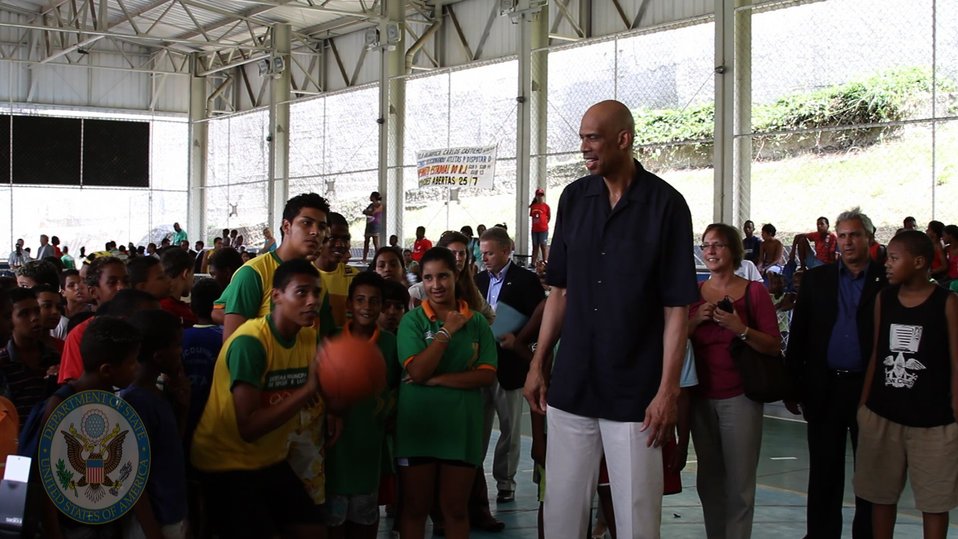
Global Cultural Ambassador Kareem Abdul-Jabbar Engages Youth

Hall-of-Famer and Global Cultural Ambassador for the U.S. Department of State Kareem Abdul-Jabbar discusses the importance of education, social and racial tolerance, cultural understanding, and using sports as a means of empowerment with youth in Rio de Janeiro, Brazil, on January 26, 2012.